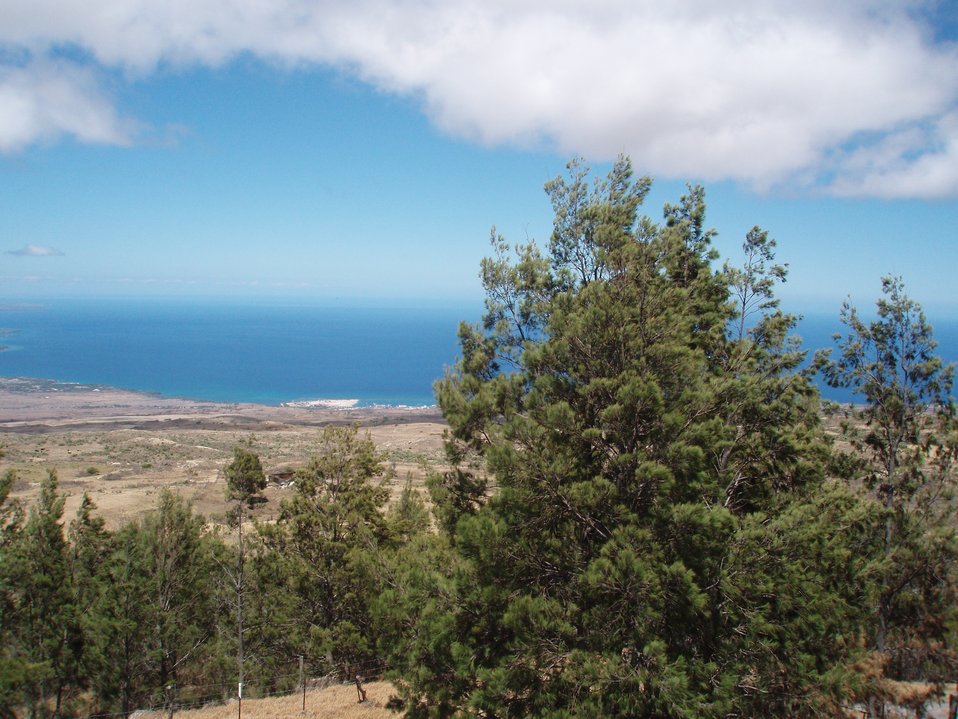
Evergreens in Hawaii.